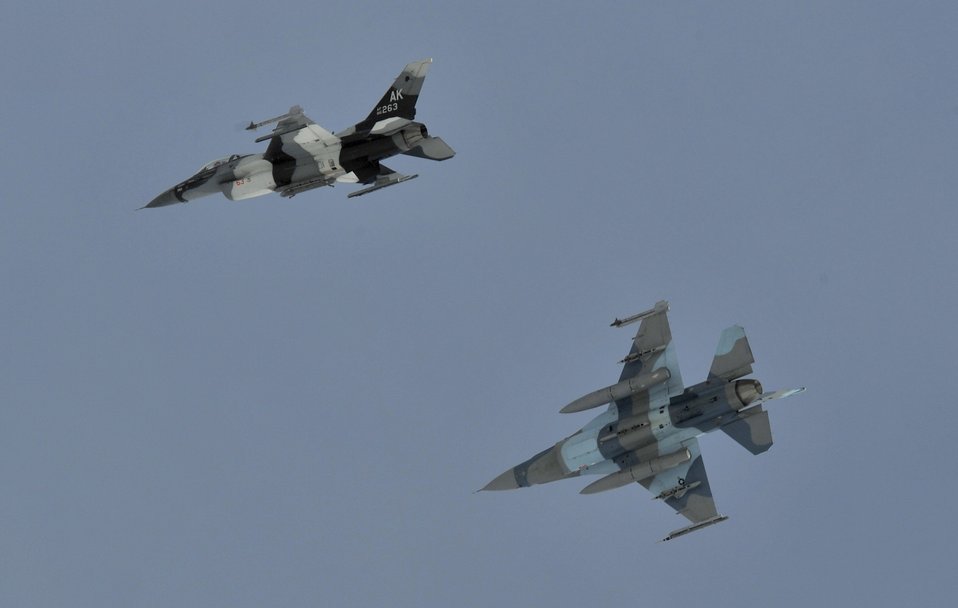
F-16s at Eielson

Two F-16 Fighting Falcons fly April 8, 2011, above Eielson Air Force Base, Alaska.